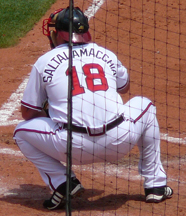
Picture I took on 5-10-07
23:15, 13 May 2007 . . Chrisjnelson . . 186×216 (95 KB)